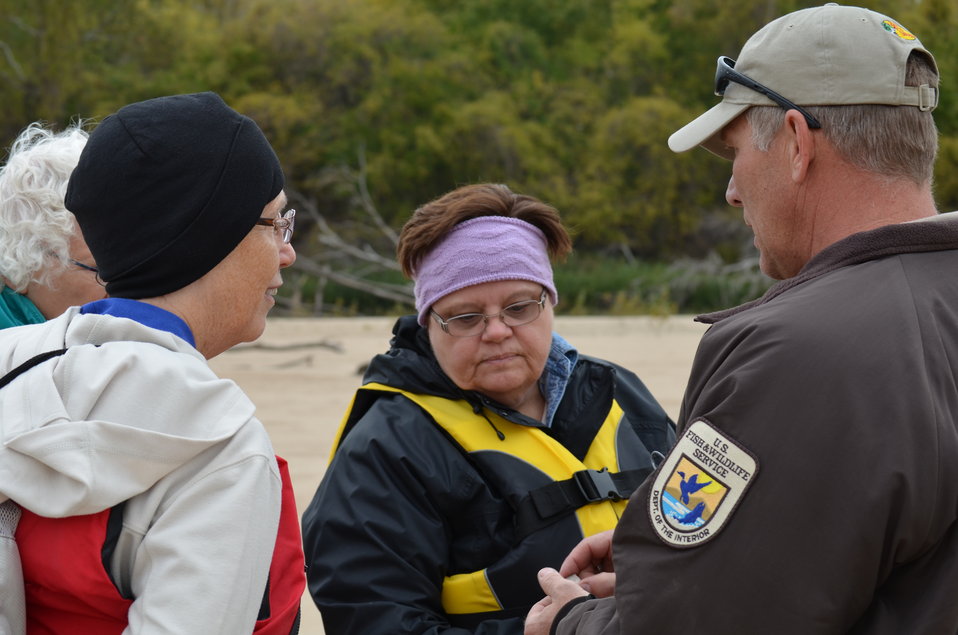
Learning about artifacts

Fish biologist Jeff Finley talks about artifacts found along the sandbar, including ancient Native American arrowheads. USFWS/Ashley Spratt